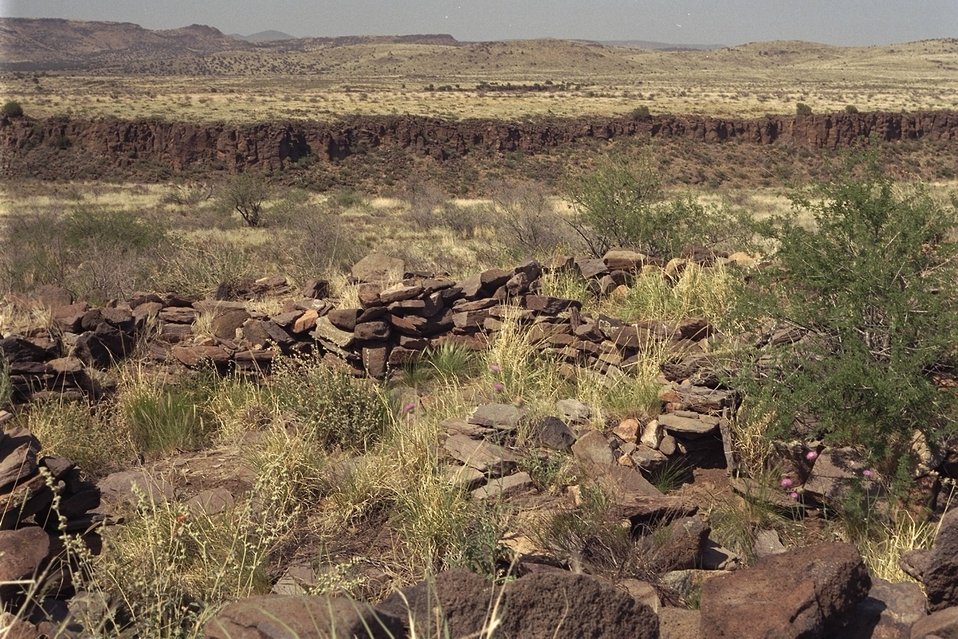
A flat spot in the Agua Fria National Monument.